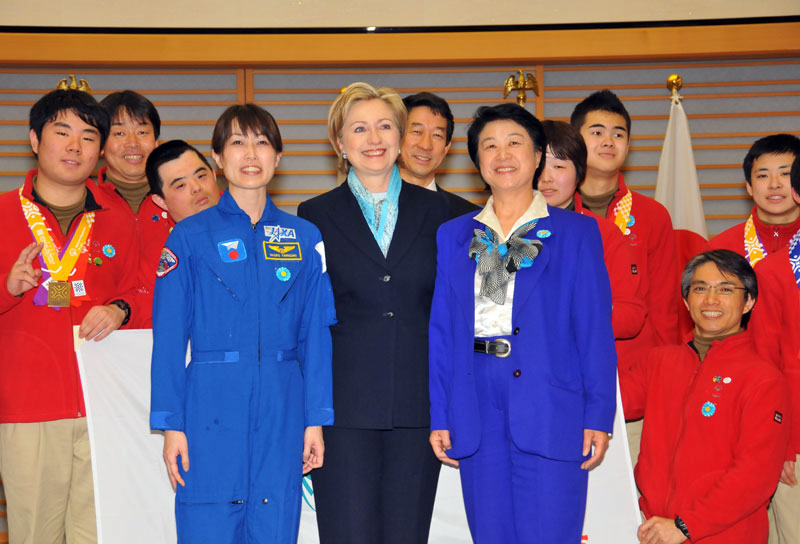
Secretary Clinton in Tokyo

U.S. Secretary of State Hillary Clinton meets Japanese astronauts Naoka Yamazaki, left, and Chiaki Mukai during an arrival ceremony at Tokyo's Haneda Airport on Feb. 16, 2009. They are surrounded by athletes from Japan's Special Olympics team.